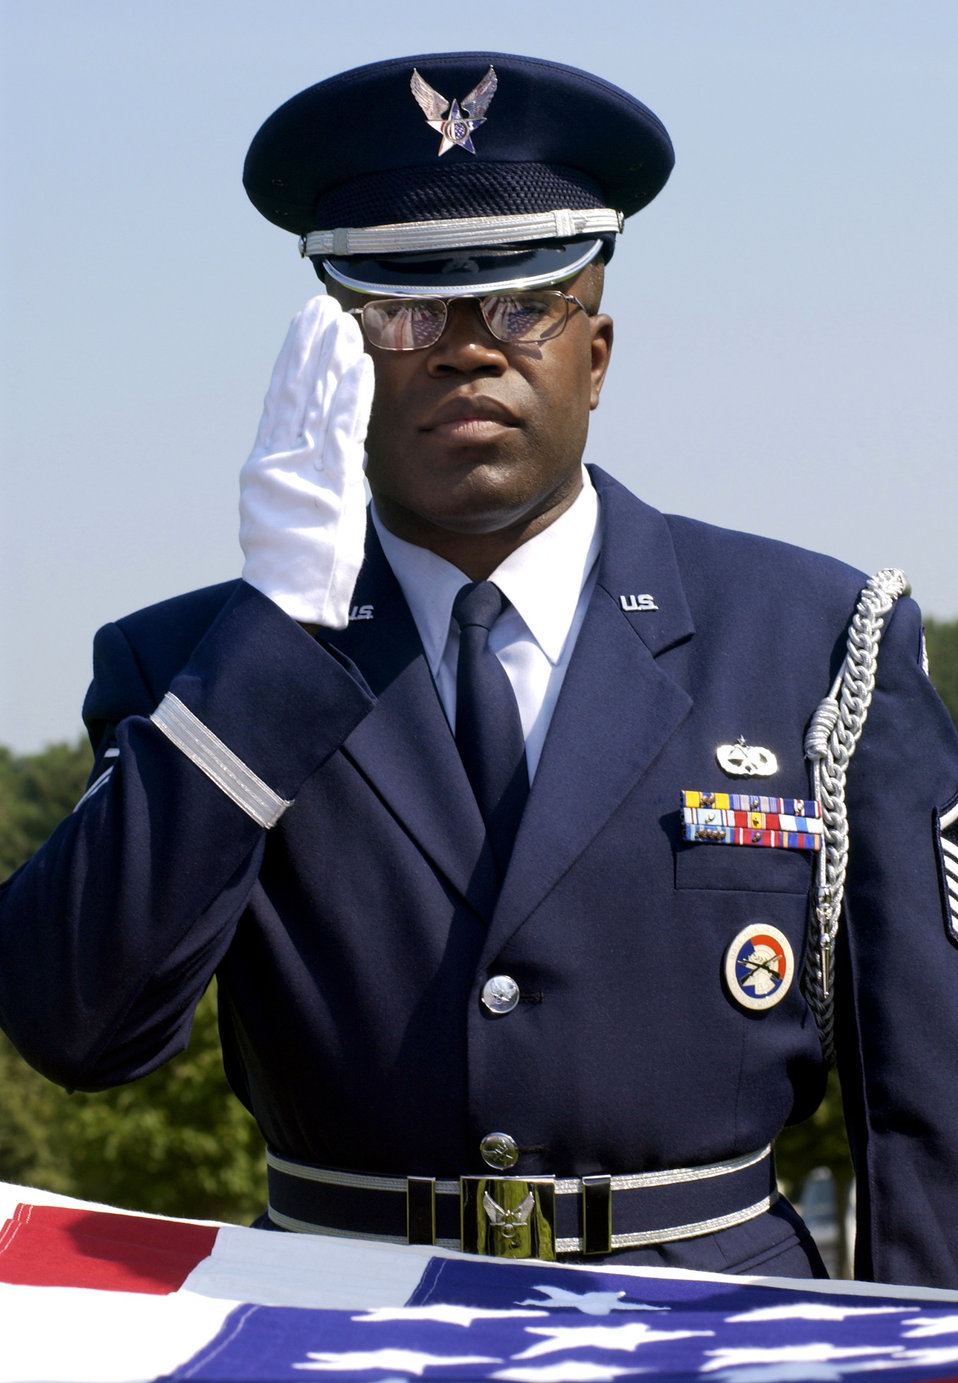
Perfection

MCGUIRE AIR FORCE BASE, N.J. -- Master Sgt. William Wilson, superintendent of the McGuire AFB Honor Guard, salutes the U.S. flag during training for military funeral honors. Wilson leads a 30-member team that covers a four-state region consisting of New York, New Jersey, Connecticut and Pennsylvania.